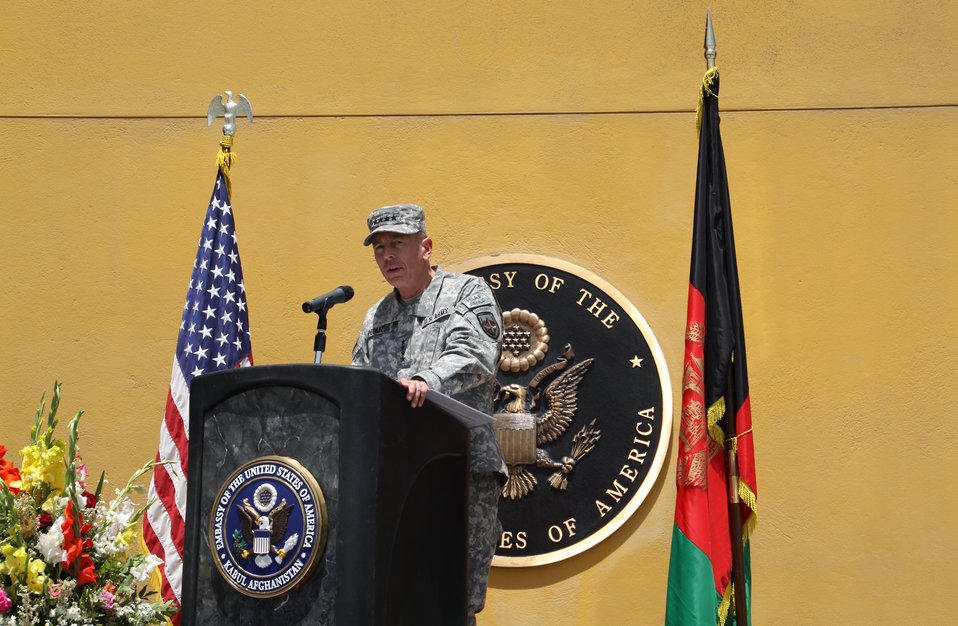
Kabul Official July 4th Celebration